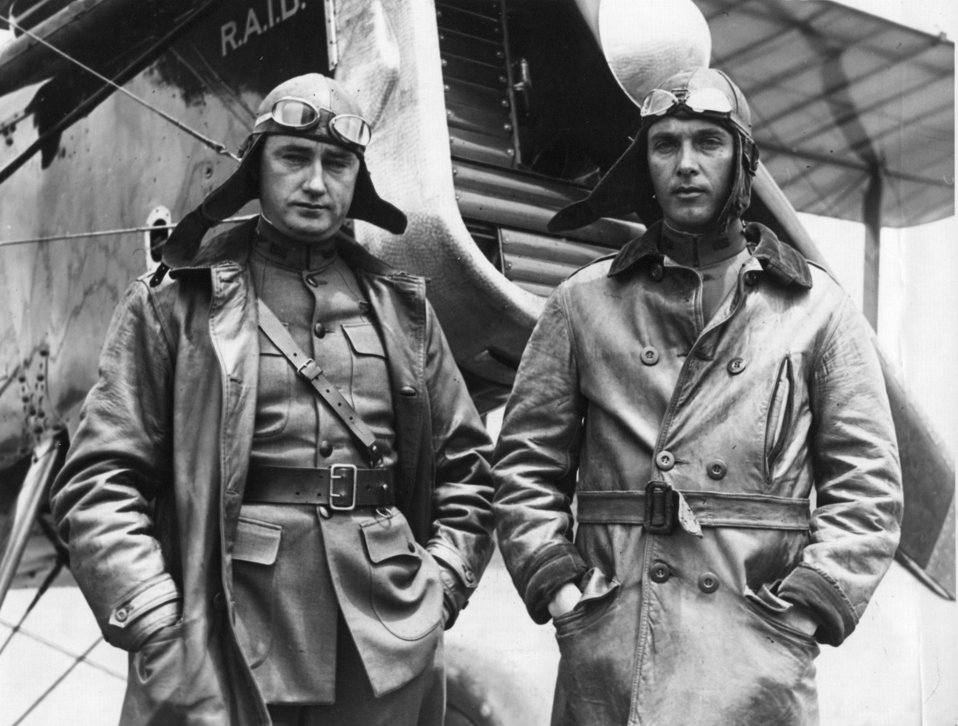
Capt. Lowell Smith and Lt. John P. Richter

Early Years -- Capt. Lowell Smith and Lt. John P. Richter, made first mid-air refueling, June 1923, at Rockwell Field.